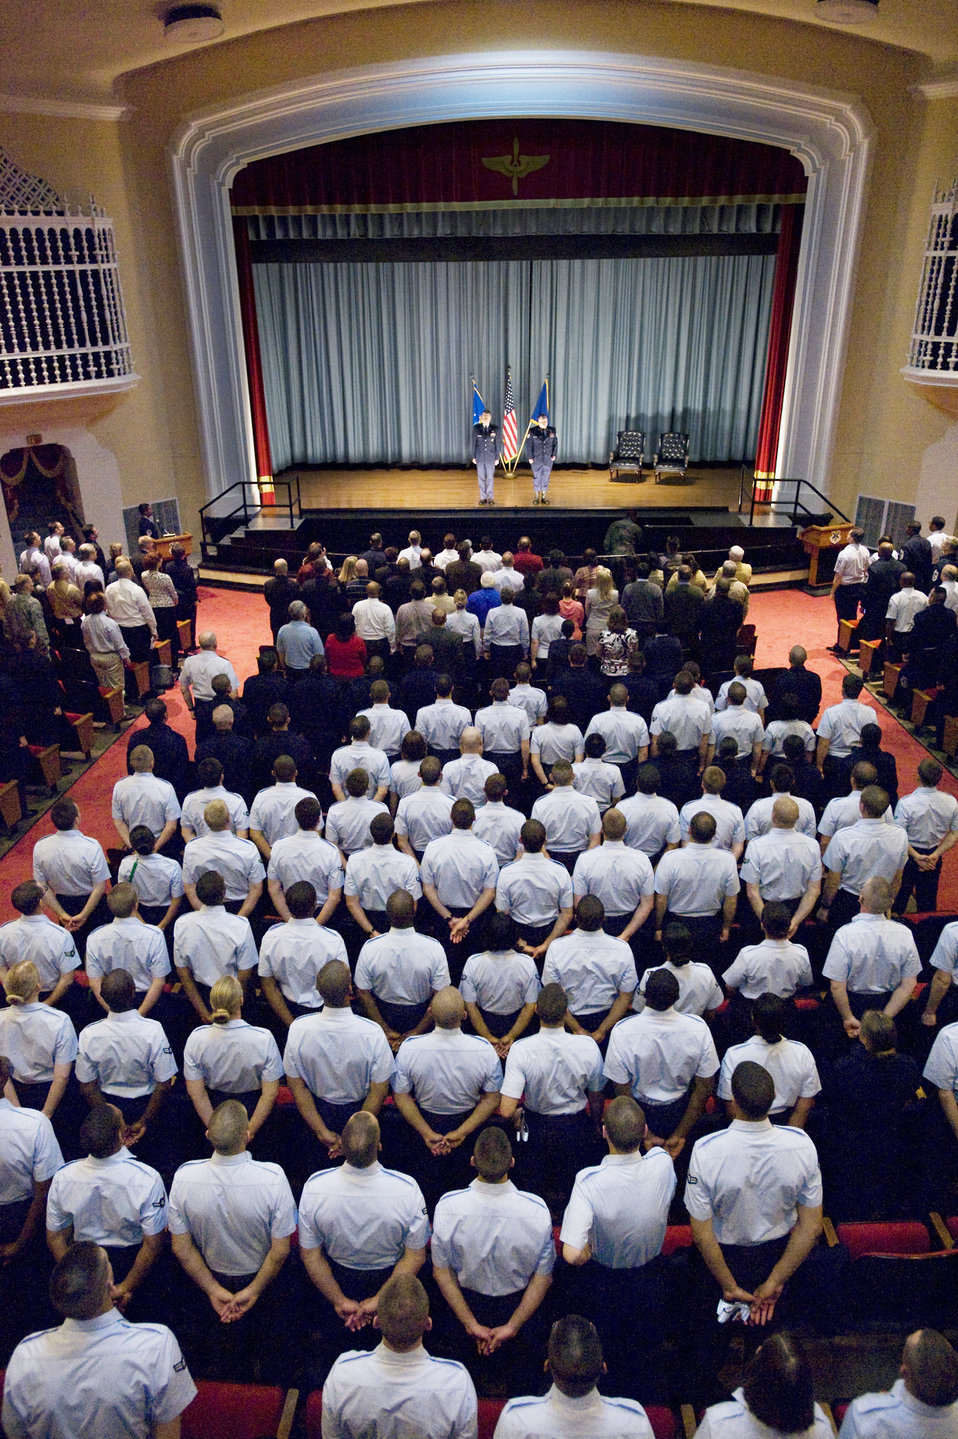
Tech. Sgt. Del Toro reenlists

Maj. Gen. Anthony Przybyslawski, vice commander of Air Education and Training Command, prepares to administer the oath of enlistment Feb. 8 to Tech. Sgt. Israel Del Toro in the nearly packed base theater at Randolph Air Force Base, Texas. Sergeant Del Toro suffered burns to more than 80 percent of his body after his vehicle was struck by an improvised explosive device in Afghanistan.